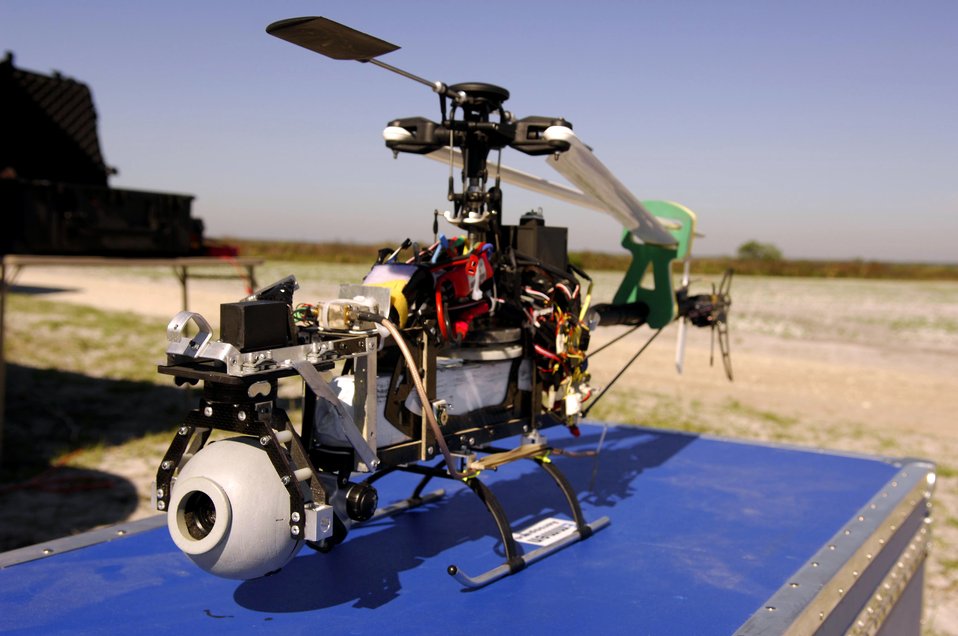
Battlefield technology key to Atlantic Strike V

A